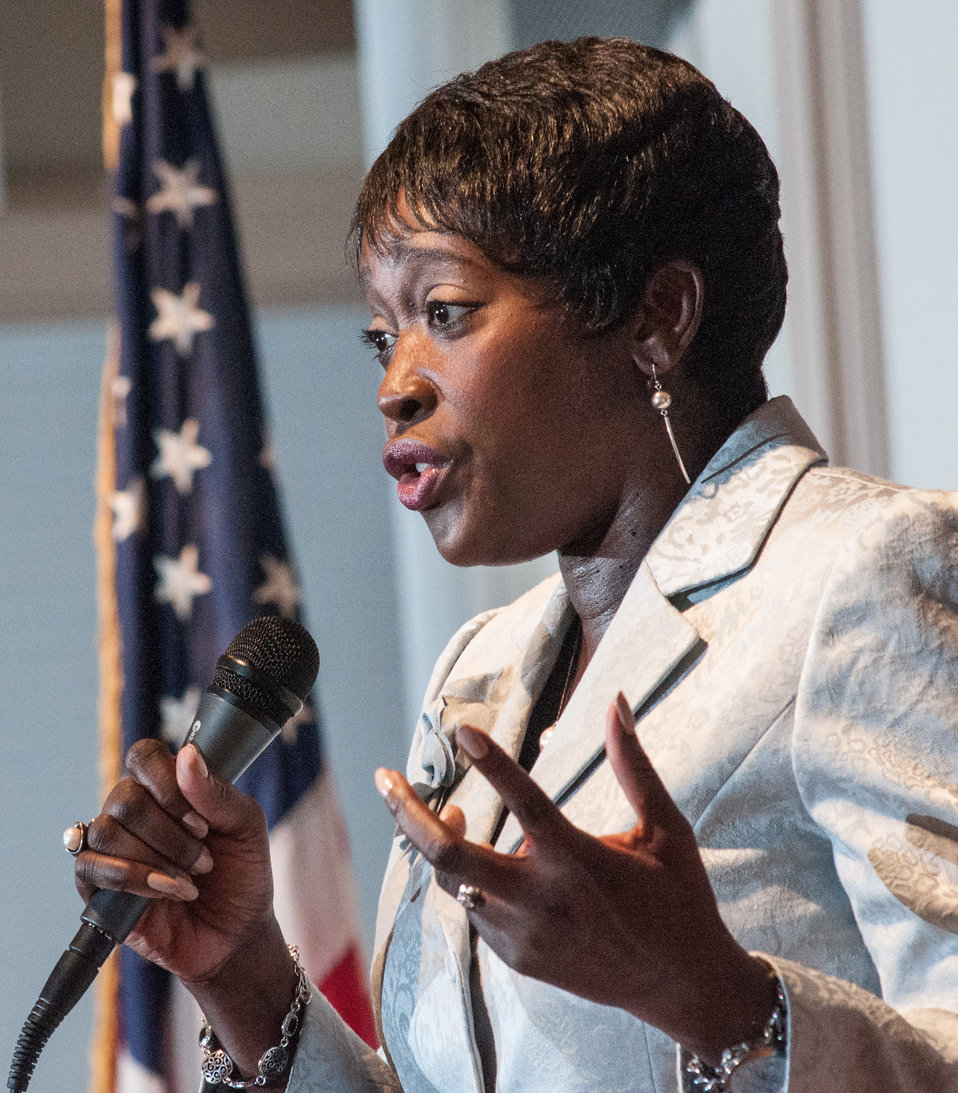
U.S. Department of Agriculture (USDA) Departmental Management Office of Advocacy and Outreach Director Carolyn Parker provided opening remarks to approximately 300 youth members, Extension Educators and 4-H Adult Volunteers from across the nation, as well as U.S. Territories at the 2013 National 4-H Conference, on Monday, April 8, 2013 in Chevy Chase, MD. National Institute of Food and Agriculture Director Dr. Sonny Ramaswamy provide additional remarks and Secretary Tom Vilsack will deliver the keynote address. The youth delegates are in grades 10-12 (15-19 years old). The purpose of the conference is to 1) engage 4-H youth in personal development experiences that will increase knowledge, resources, and skills; 2) discuss topics affecting youth and 4-H programming nationwide; and 3) empower and mobilize 4-H youth to create positive social change in their communities in a meaningful and genuine way. The conference also reinforces the rich history of 4-H and its valuable tie to USDA, Cooperative Extension and the Land-Grant University System.